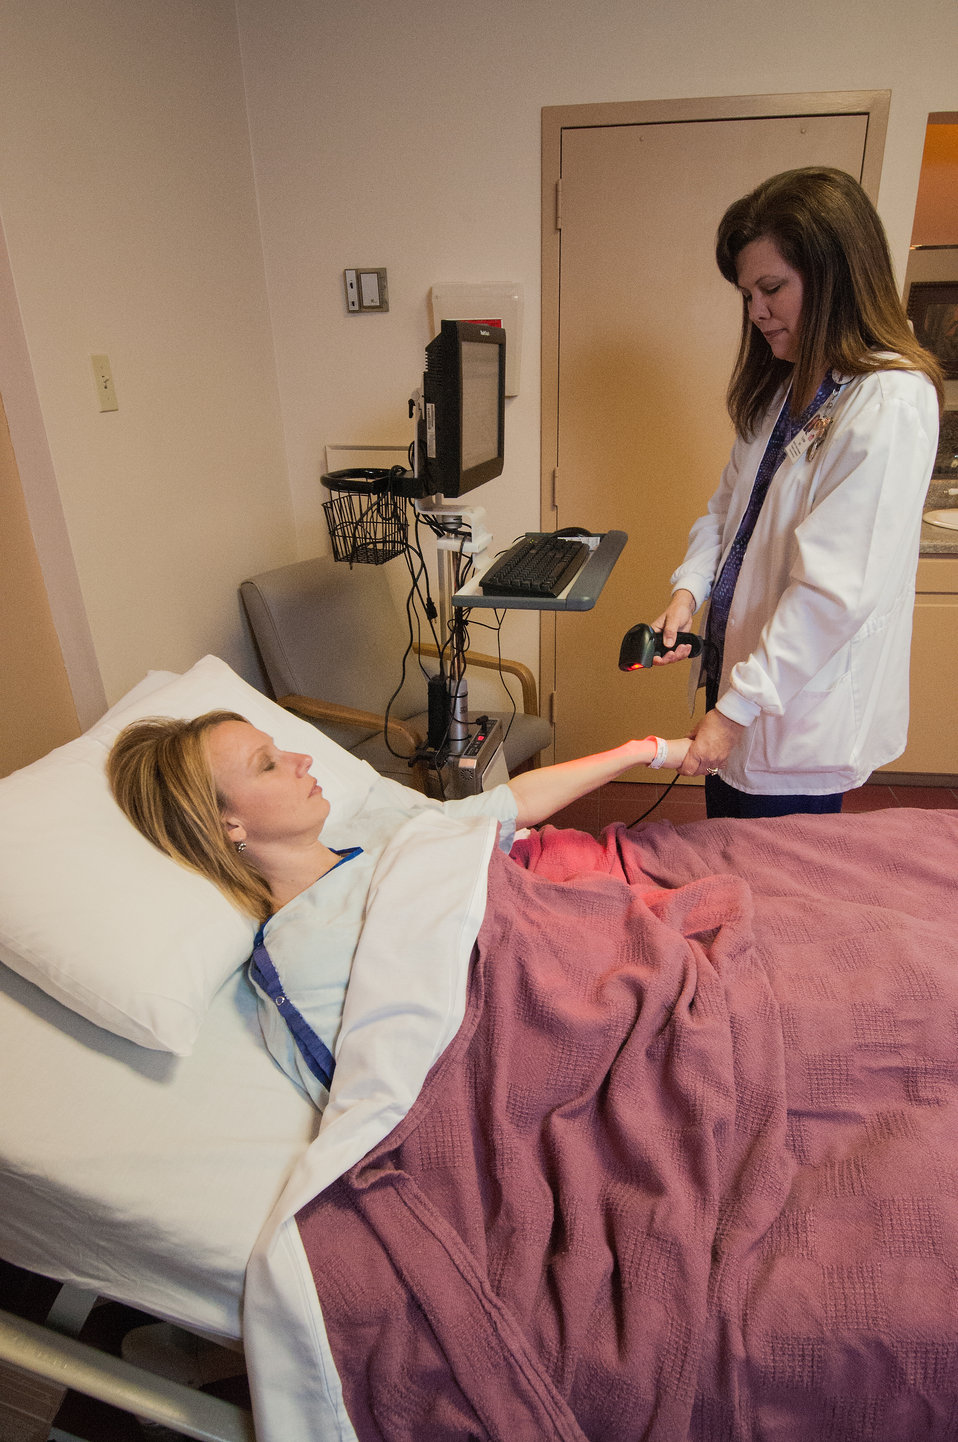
R.J. Taylor Memorial Hospital, Inc. Licensed Practical Nurse Dora Cater, LPN scans patient’s wristband with a hand held scanner to verify the patient’s information with the hospitals Electronic Medical Records data in Hawkinsville, GA on Mar. 6, 2013. Electronic Medical Records are essentially an electronic point-of-care capture of medical data that can be easily accessed and allow for integration across different health care settings by being embedded internet-work connected enterprise wide information systems. Such records may include a wide range of data in comprehensive or summary, immunization status, laboratory test results, radiology images and billing information. Patient data stored electronically is simplified for data gathering for running needed organizational, state, and Federal reports. R.J. Taylor Memorial Hospital, Inc. has purchased an Electronic Medical Records System under an incentive program by the Federal government through the U.S. Department of Agriculture (USDA) Rural Development (RD) Community Facilities Loan (CF) that ensures fiscally responsive access to superior quality integrated health care.